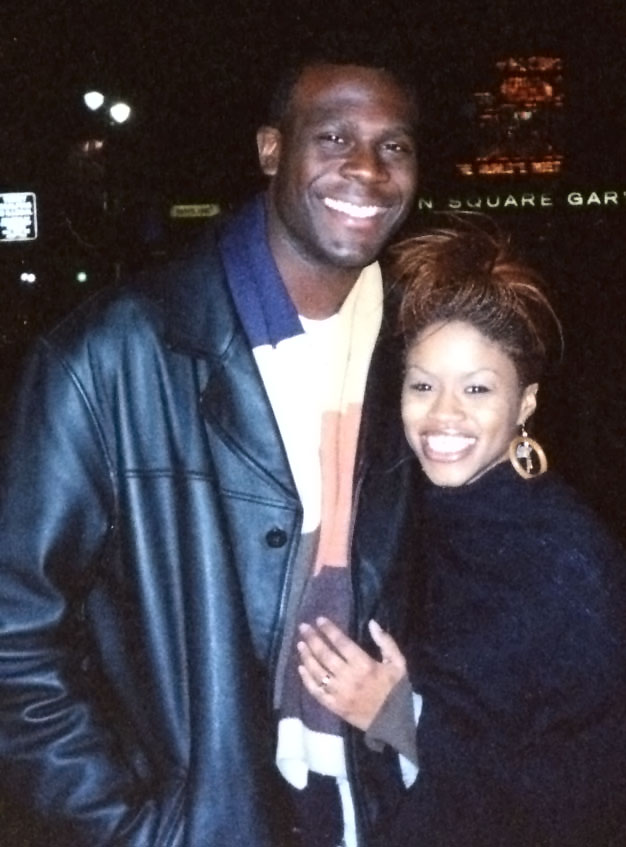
Lieutenant pops question in national magazine

1st Lt. Kerry Mackey Jr. and his fiancee Diedra Chism of Memphis, Tenn., became engaged when the lieutenant proposed in Essence Magazine's February issue dedicated to love. Lieutenant Mackey is assigned to the 305th Comptroller Squadron at McGuire Air Force Base, N.J.